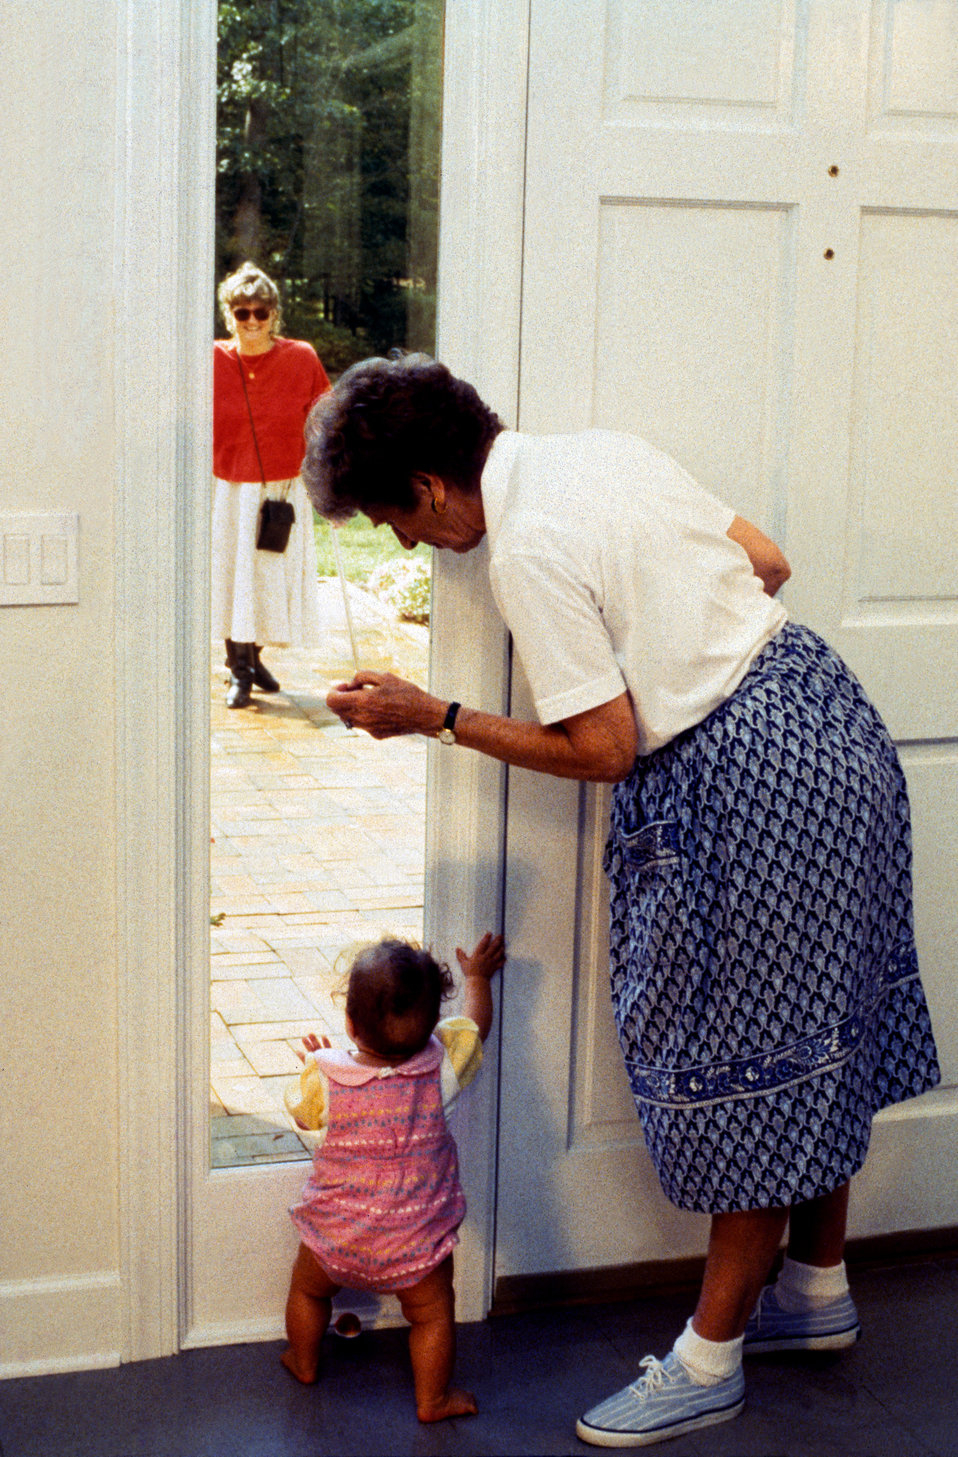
This 1996 image depicted a grandmother with her granddaughter as they were standing at the front door to their home, and looking out through a full-height glass side-panel sidelight window towards the visitor who was approaching the closed doorway. The floor-to-ceiling sidelight window allowed both the very short toddler, as well as the adult woman to effortlessly see outside for approaching visitors, weather changes, etc., without having to open the door.